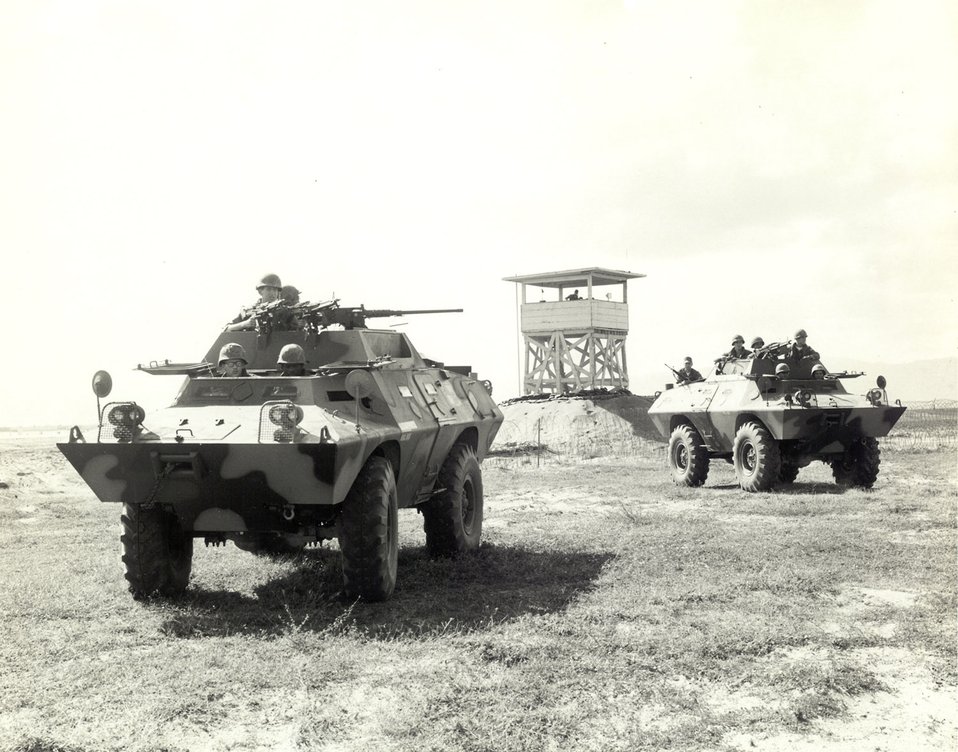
Operations in South Vietnam

Members of the 31st Security Police Squadron train with two V-100 Commando Cars at Tuy Hoa Air Base, South Vietnam. The commando cars were used to supplement base defense capabilities by providing an element of mobility. Photo date is estimated in 1968.